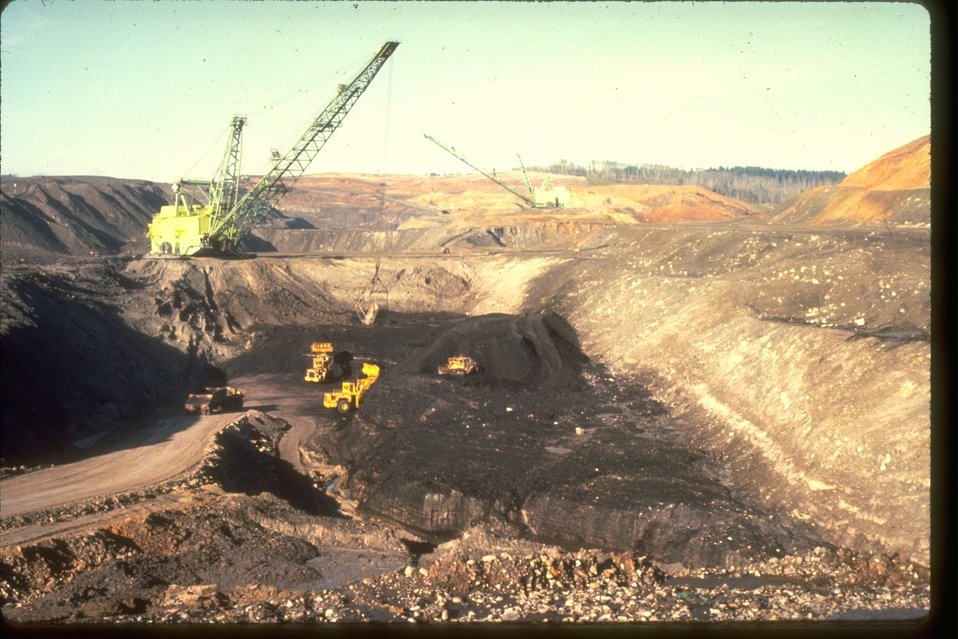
Draglines, trucks and shovels are used to mine coal from multi-seam deposit near Centralia, Washington.